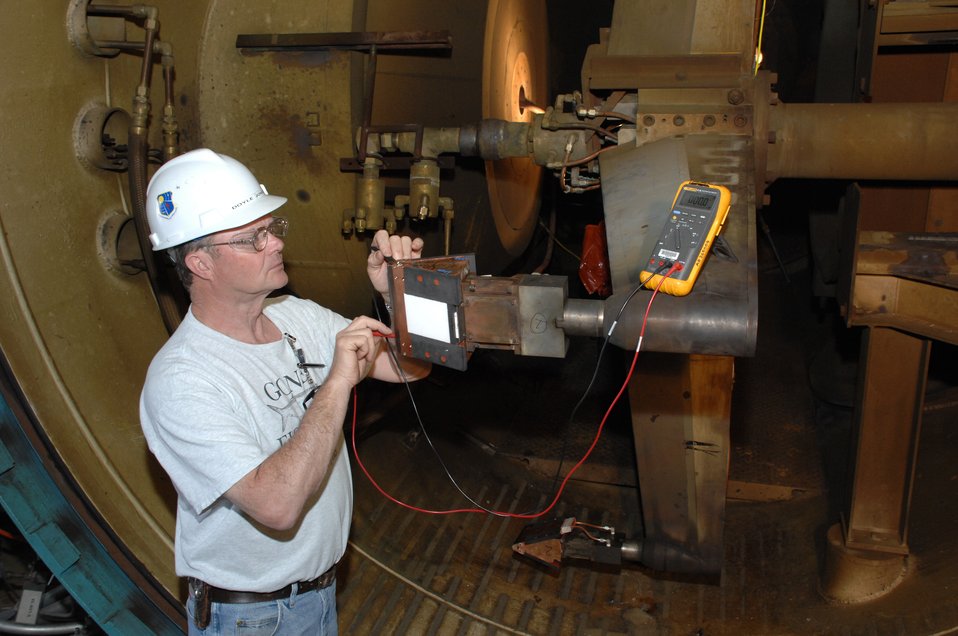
Mars Rover

Aerospace Testing Alliance Instrumentation Technician Doyle Jones performs a continuity check on the instrumentation inside the Orion Crew Exploration Vehicle heat shield material candidate model prior to a test run in Arnold Engineering Development Center's H2 test facility.